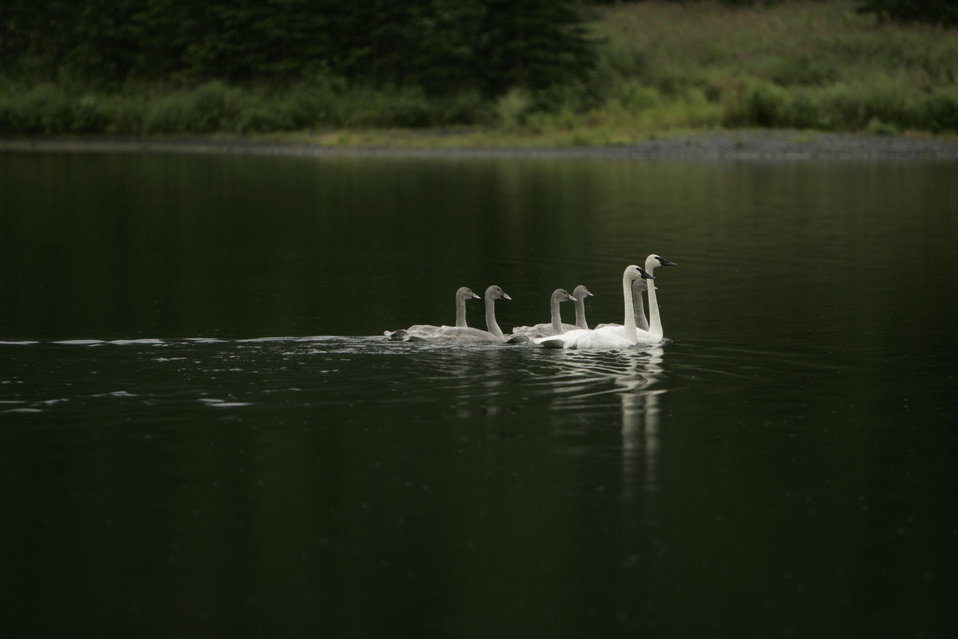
Swans On A Kenai NWR Lake

A pair of adult Trumpeter swans swim with their cygnets on a Kenai National Wildlife Refuge lake